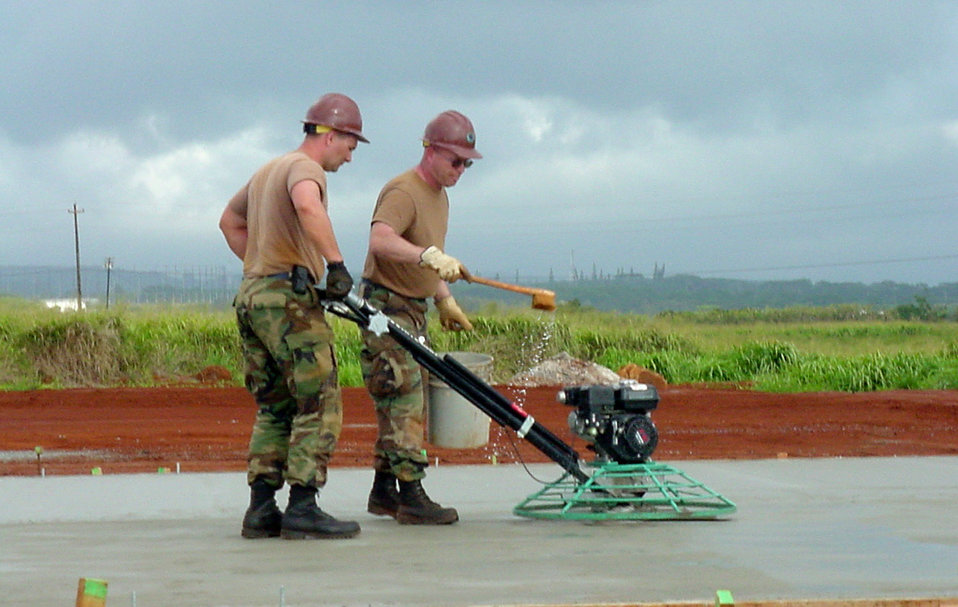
Civil engineers assist in humanitarian mission

Tech. Sgt. Ryan Arnold smoothes concrete while Senior Master Sgt. Gregory Karrels sprinkles water over the worked area. Both civil engineers are assigned to the 440th Airlift Wing based at General Mitchell Air Reserve Station in Milwaukee. Forty-four reservists from the 440th Civil Engineer Squadron deployed on the humanitarian mission to Hawaii.